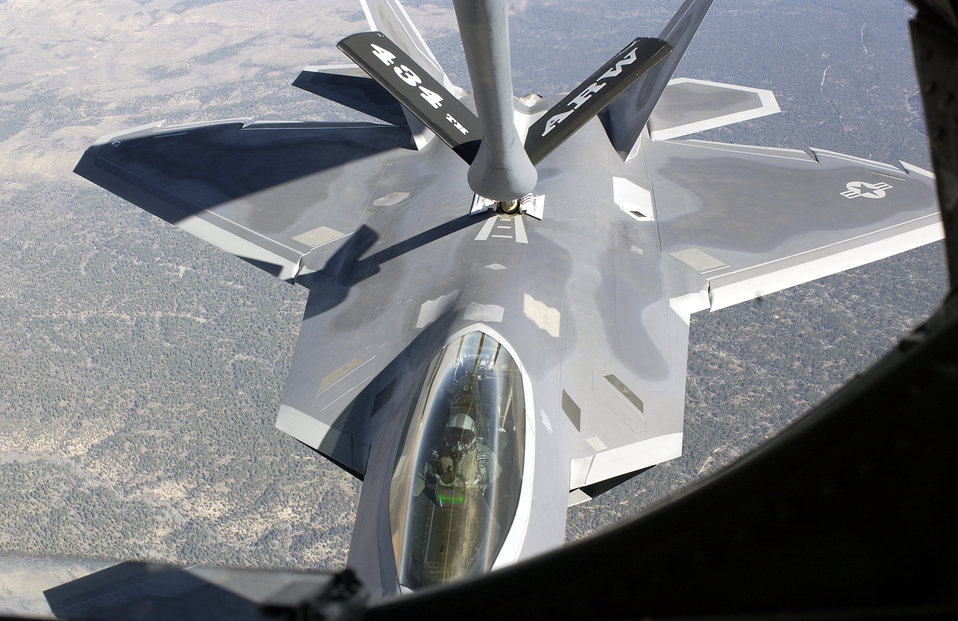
Raptor refueling

NELLIS AIR FORCE BASE, Nev. -- An F/A-22 Raptor is refueled by a KC-135 Stratotanker over the Grand Canyon National Park. The Air Warfare Center is playing a major role in the Initial Operational Test and Evaluation of the aircraft.